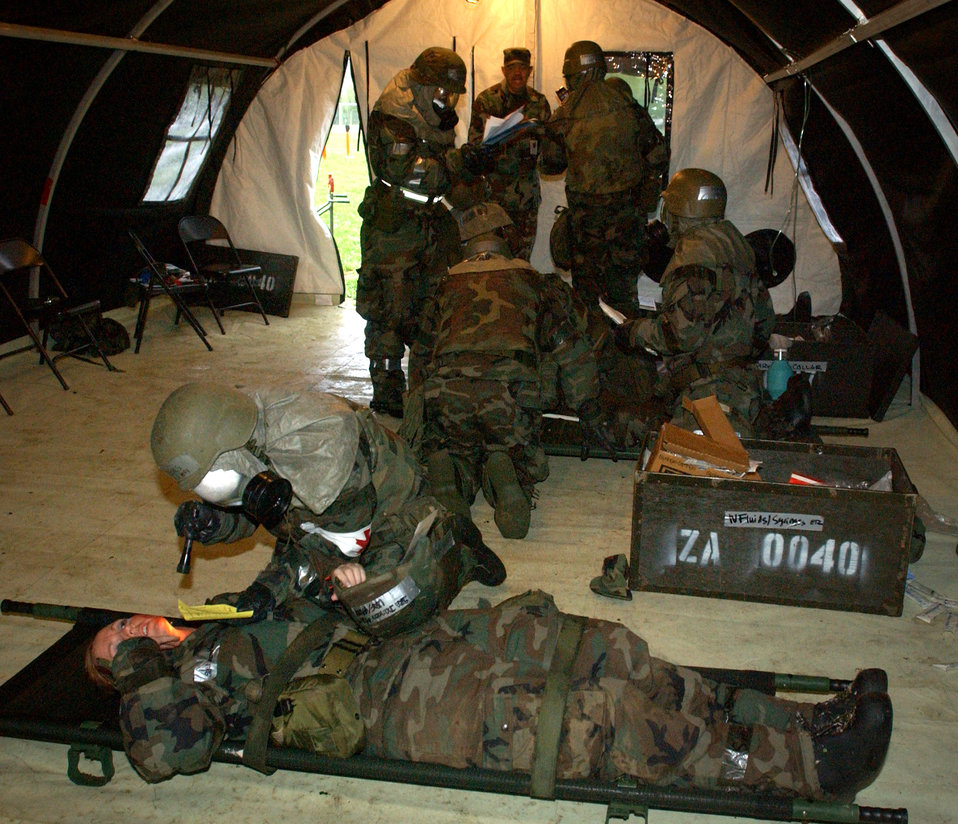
Medics train to be combat-ready

Airmen from the 31st Medical Group at Aviano Air Base, Italy, go through an exercise scenario during combat medical readiness training on Thursday, April 27, 2006. The training prepares Airmen for deployments and rapid response in emergency situations.